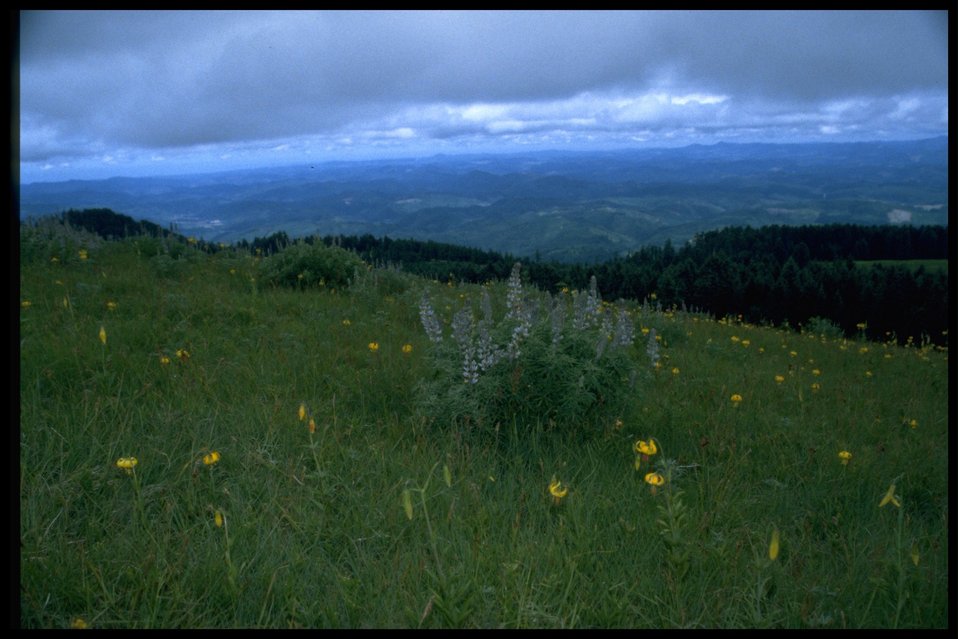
Wide shot of meadow and Tiger Lilys, Lilium columbianum.